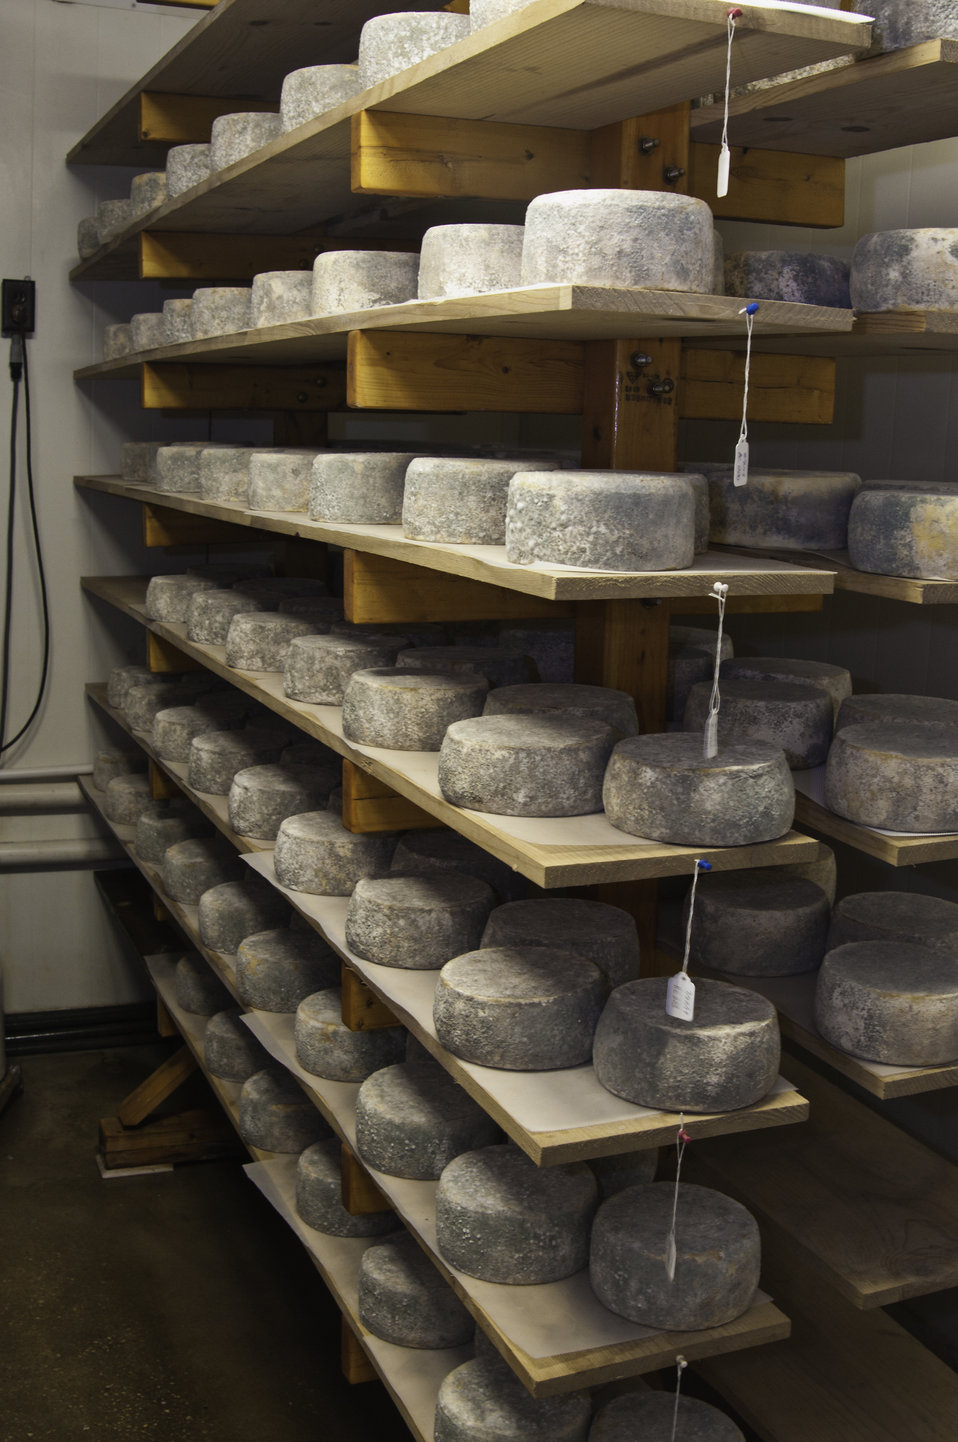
Cheese rounds that have been inoculated with mold cure in the aging room to produce Chapel’s Country Creamery, “Bay Blue” cheese. The dairy produces hand crafted artisanal cheeses with fresh raw milk produced on the dairy’s Grade A dairy farm in Easton, MD. The dairy’s grass fed Jersey and Holstein cows produce high quality milk, rich in cream. The milk is all- natural and contains no synthetic hormones, antibiotics, or chemical compounds. They mentioned that by producing our own cheese from start to finish, we insure the highest quality possible.